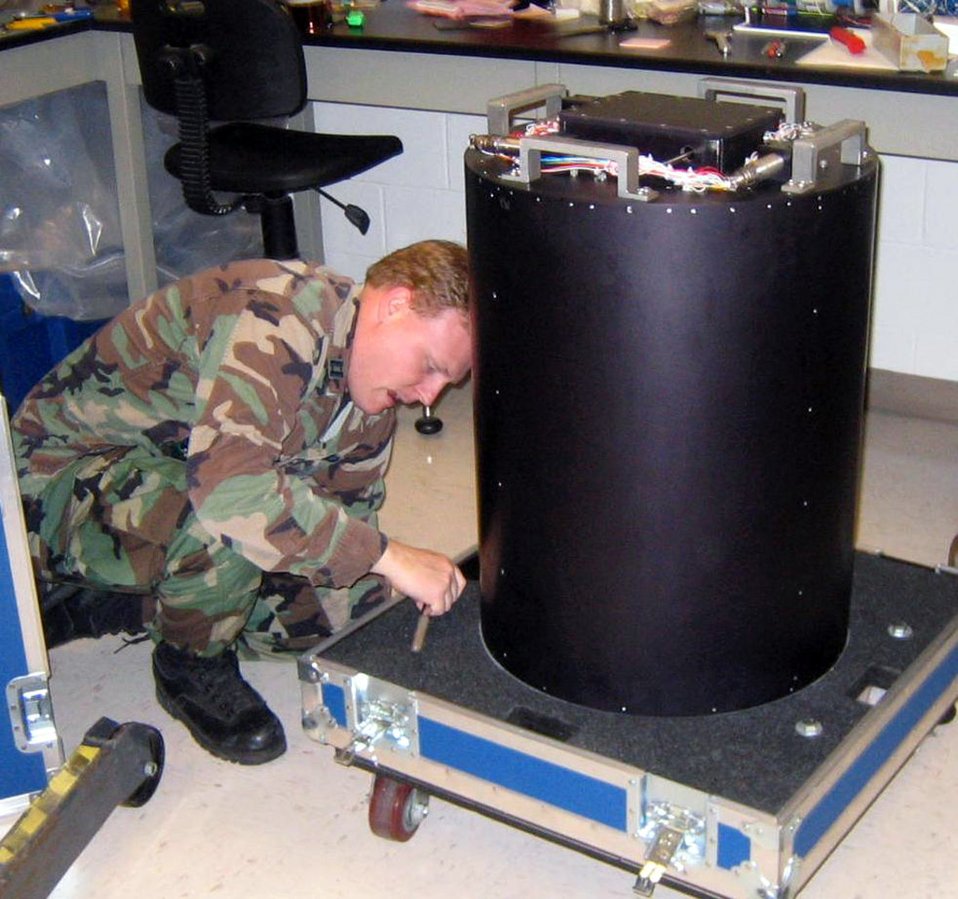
AFIT students conduct payload testing for space shuttle

Capt. Jeremy Owens packages an Air Force Institute of Technology experiment for transport to the Johnson Space Center for preflight testing June 5 at the AFIT laboratory at Wright-Patterson Air Force Base, Ohio. An upcoming space shuttle mission is going to feature a flight hardware experiment designed by AFIT students from the graduate school of engineering and management's department of aeronautics and astronautics.